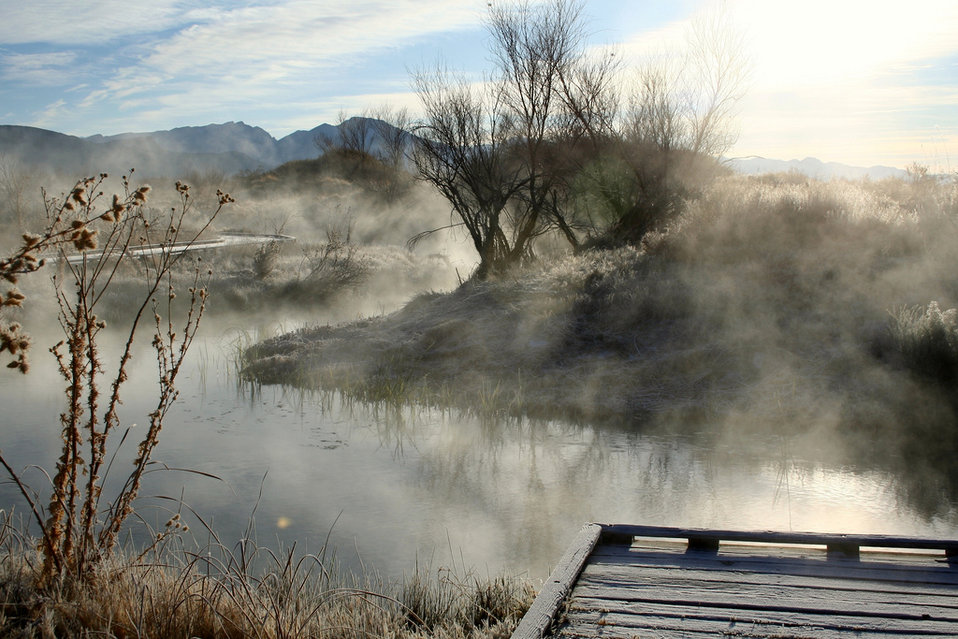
Ash Meadows National Wildlife Refuge, NV